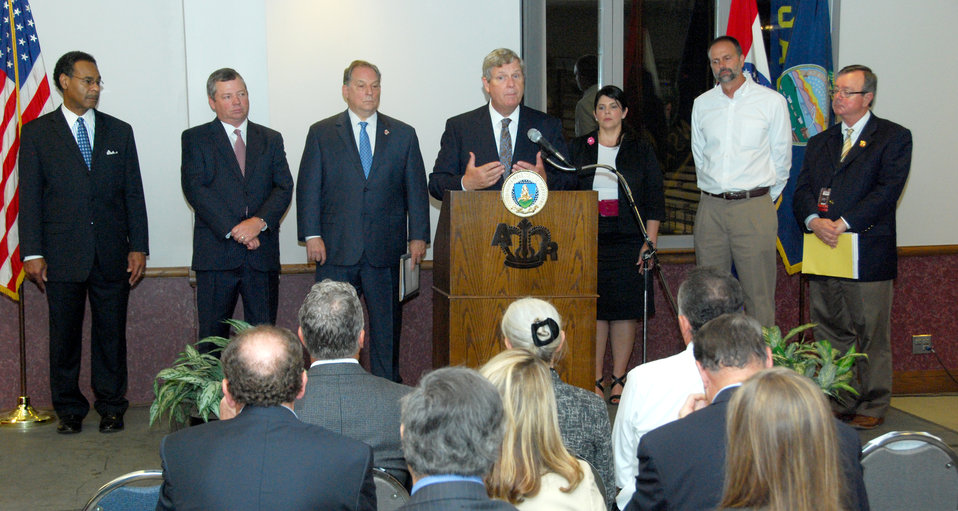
Agriculture Secretary Tom Vilsack makes remarks at the American Royal & Agri-business Council of KC, in Kansas City, MO., on Friday, June 21, 2013. On stage behind Sec Vilsack, from left: Congressman Emanuael Cleaver, 5th District Missouri; Randy Mooney, chairman, Dairy Farmers of America; Jim Heeter, KC Chamber of Commerce; Teresa Garza Ruiz, MO state representative and former Labor rep; Brian Hemann, Kansas dairy farmer; Bob Petersen, executive director, The Agricultural Business Council of Kansas City/ president and CEO of American Royal Association.